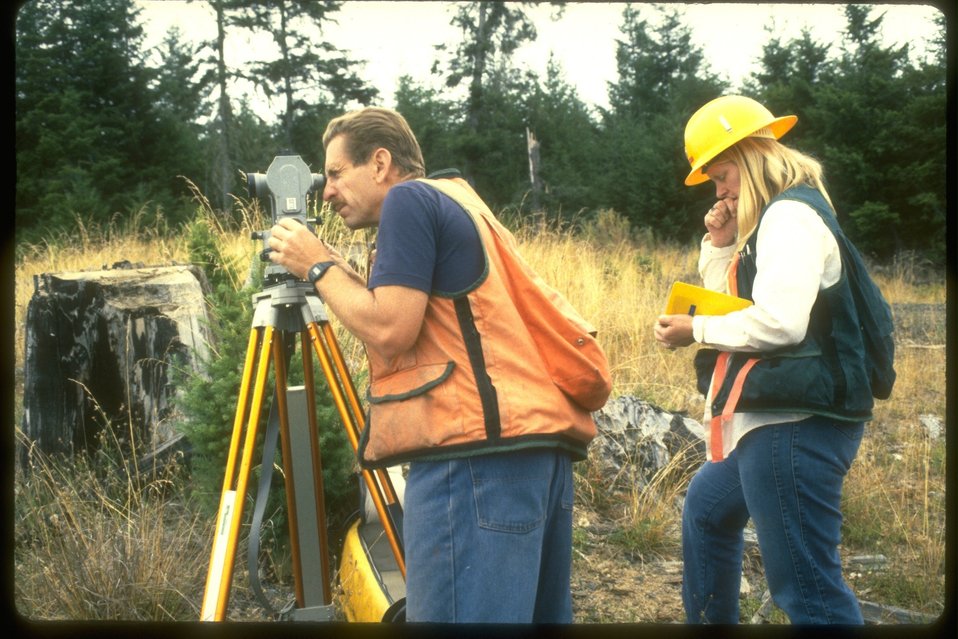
BLM employees surveying land.